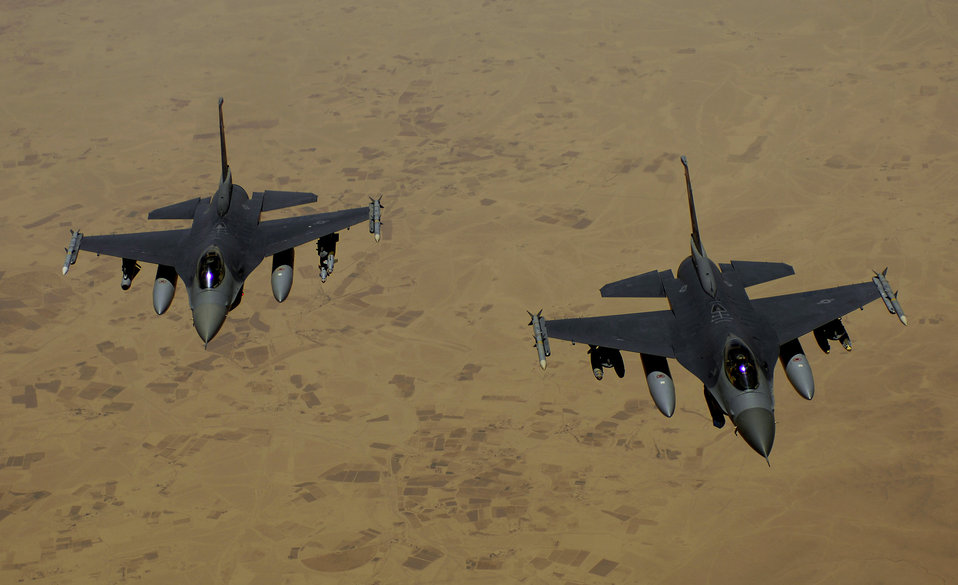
June 18 airpower summary: F-16s perform shows of force

Two Air Force F-16 Fighting Falcons aircraft return to the fight after receiving fuel during a mission over Iraq. F-16s are assigned to Joint Base Balad and is deployed from Hill Air Force Base, Utah.